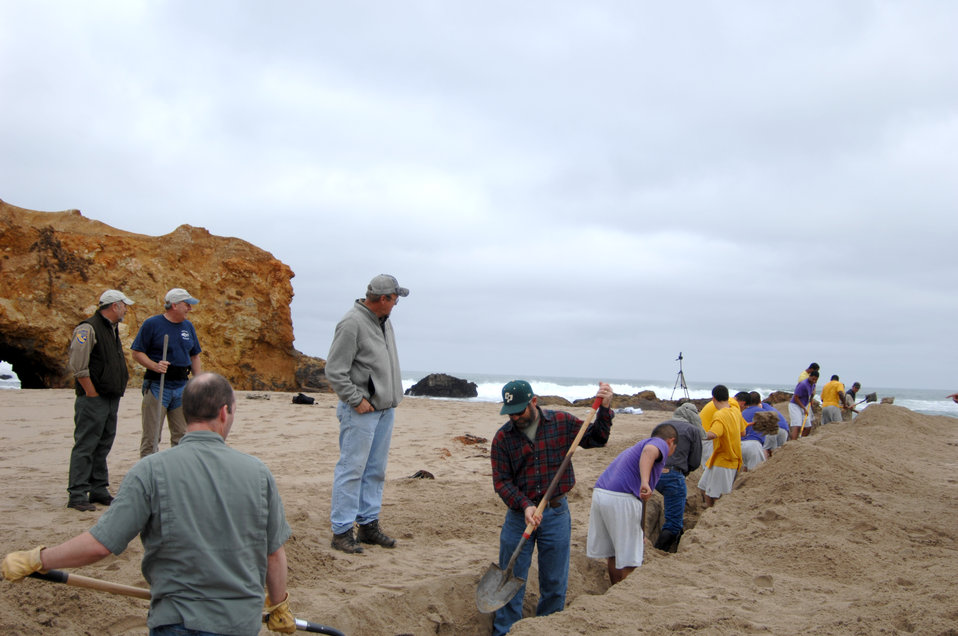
Pescadero Breach 6